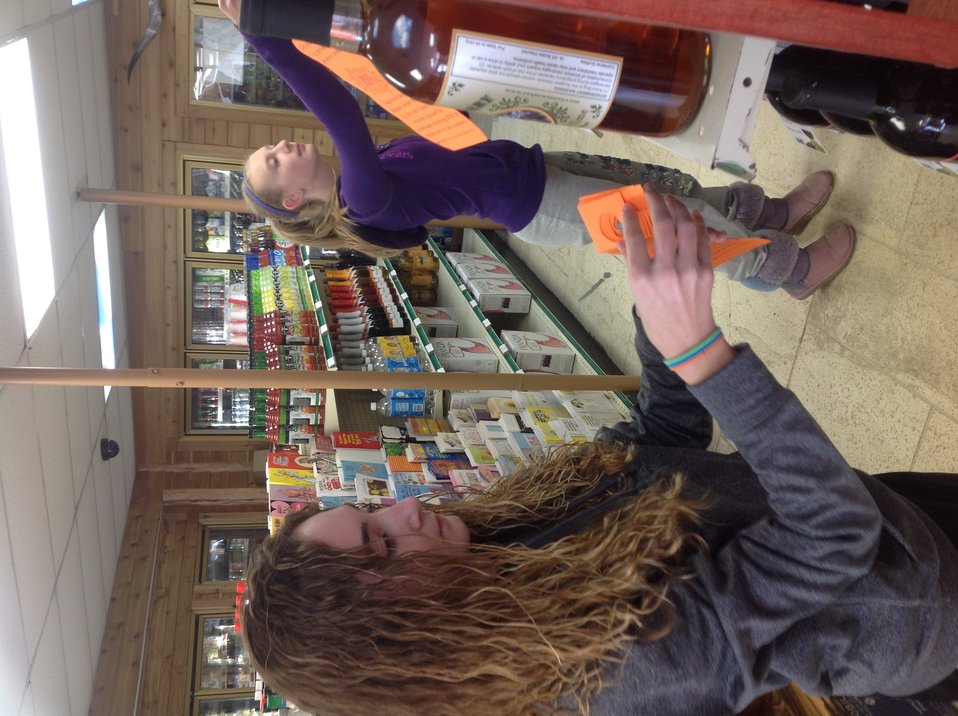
Taking a Stand: NDFW 2014

Teenagers from the Van Buren County SAFE Coalition's, Youth Leadership Council (YLC) in Keosauqua, Iowa participate in various events during National Drug Facts Week, 2014.